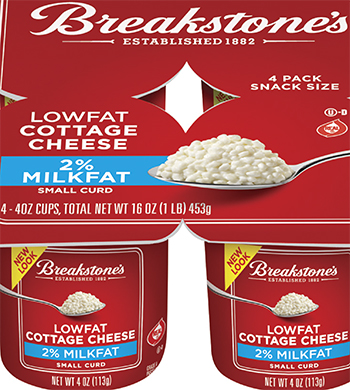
RECALLED – Cottage Cheese products

May 17, 2014 – Product Recall – Kraft Foods Group Voluntarily Recalls Select Cottage Cheese Products Due to Out-of-Standard Storage Temperatures
Certain Knudsen Cottage Cheese, Breakstone’s Cottage Cheese, Simply Kraft Cottage Cheese and Daily Chef Cottage Cheese Products Included in the Recall
.